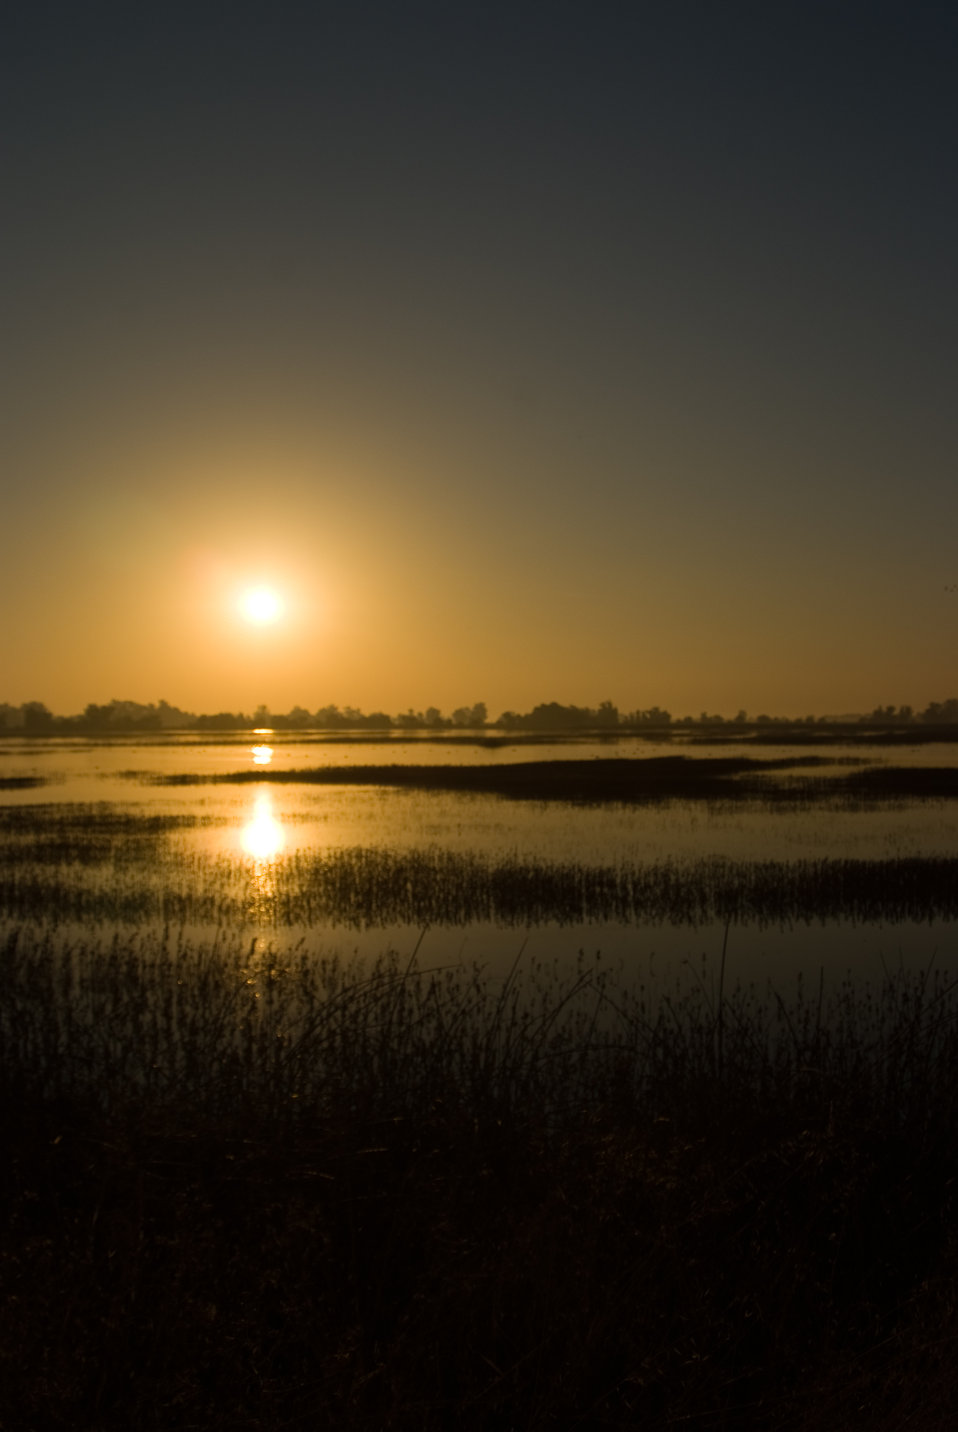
Sunset at Sacramento National Wildlife Refuge

Sacramento National Wildlife Refuge is one of California's premier waterfowl refuges. Waterfowl are present from September through March. View hundreds of thousands of geese and ducks from November through January. Many other birds and mammals provide year-round viewing.